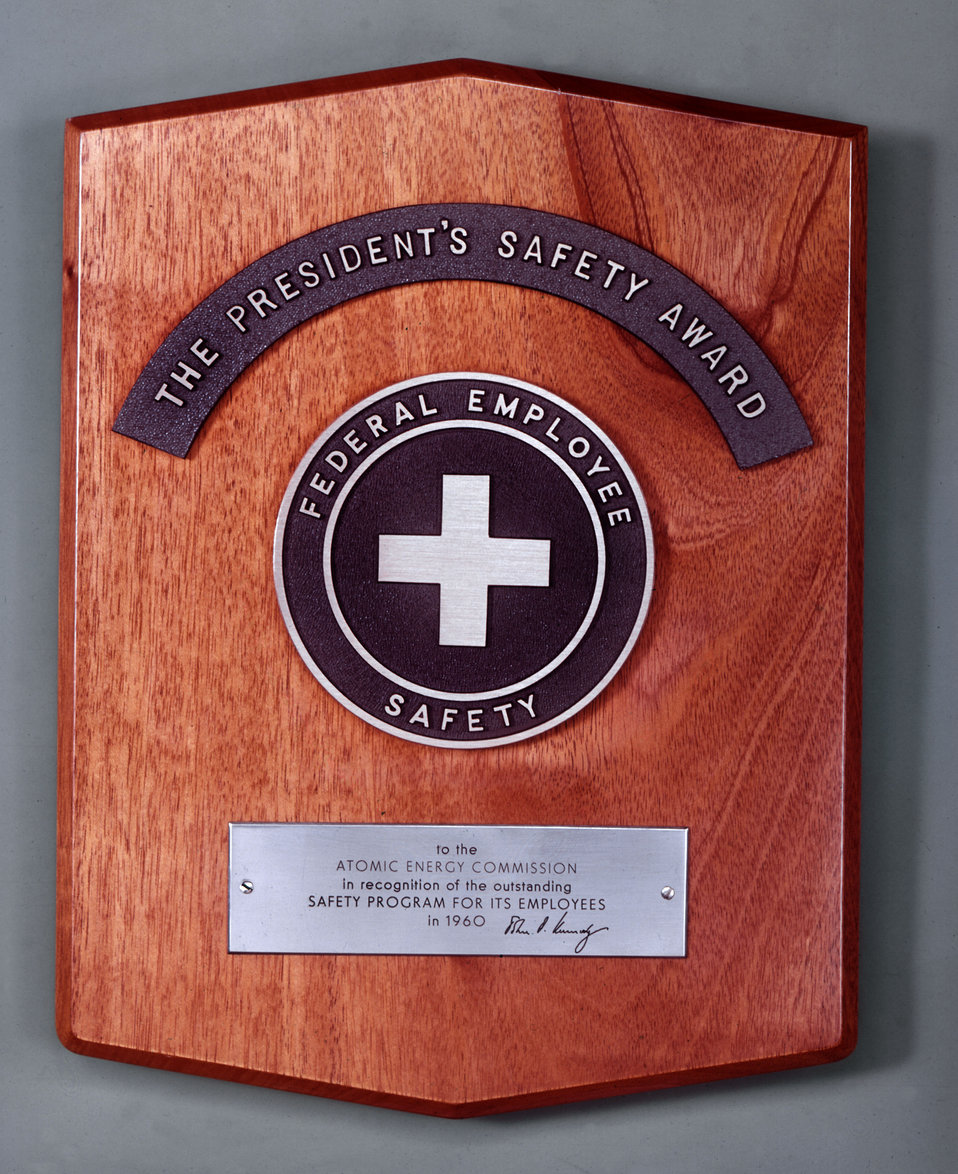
President's Saftey Award Oak Ridge

61-1334c DOE photo Ed Westcott 1960 Oak Ridge Tennessee